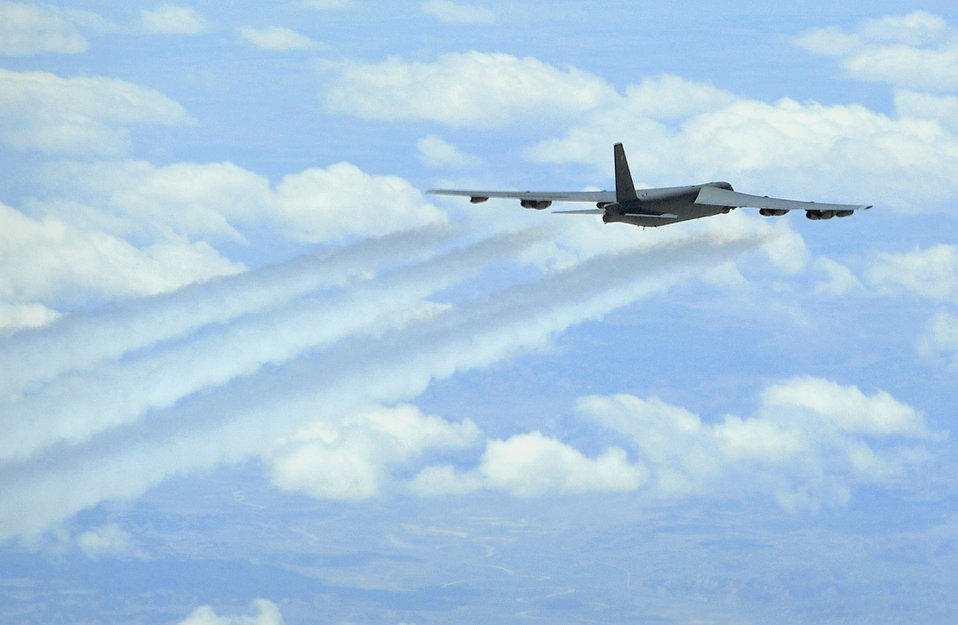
Into the blue

A B-52 Stratofortress flies April 20, 2011, during an eight-hour sortie to practice bomb-dropping sequences and aerial refueling.